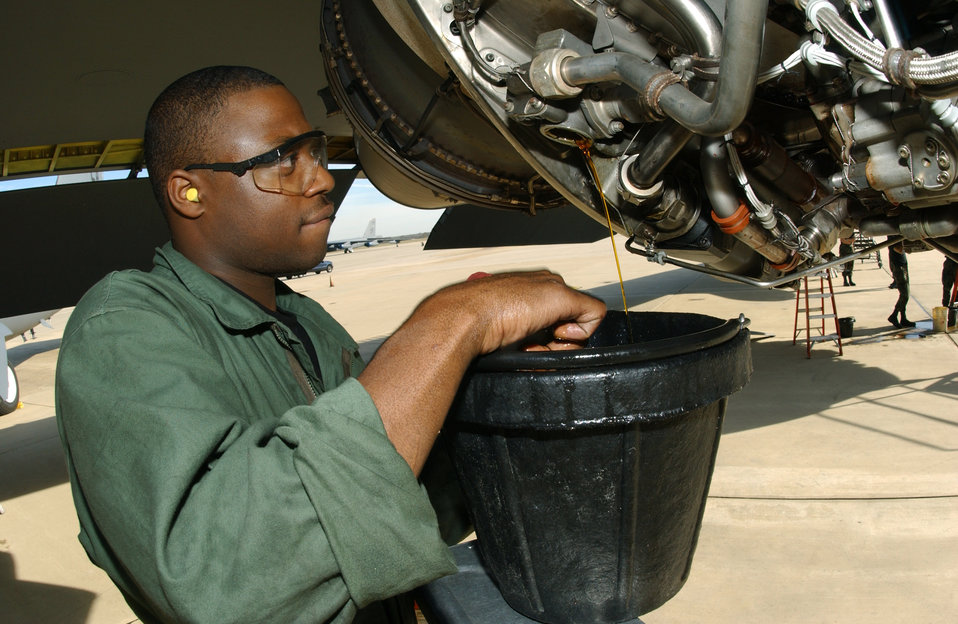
Stratofortress maintenance

BARKSDALE AIR FORCE BASE, La. -- Airman 1st Class Tarmarcus Spencer drains oil from a B-52H Stratofortress bomber engine during a maintenance inspection here Dec. 2. Airman Tarmarcus is assigned to the 2nd Maintenance Squadron.